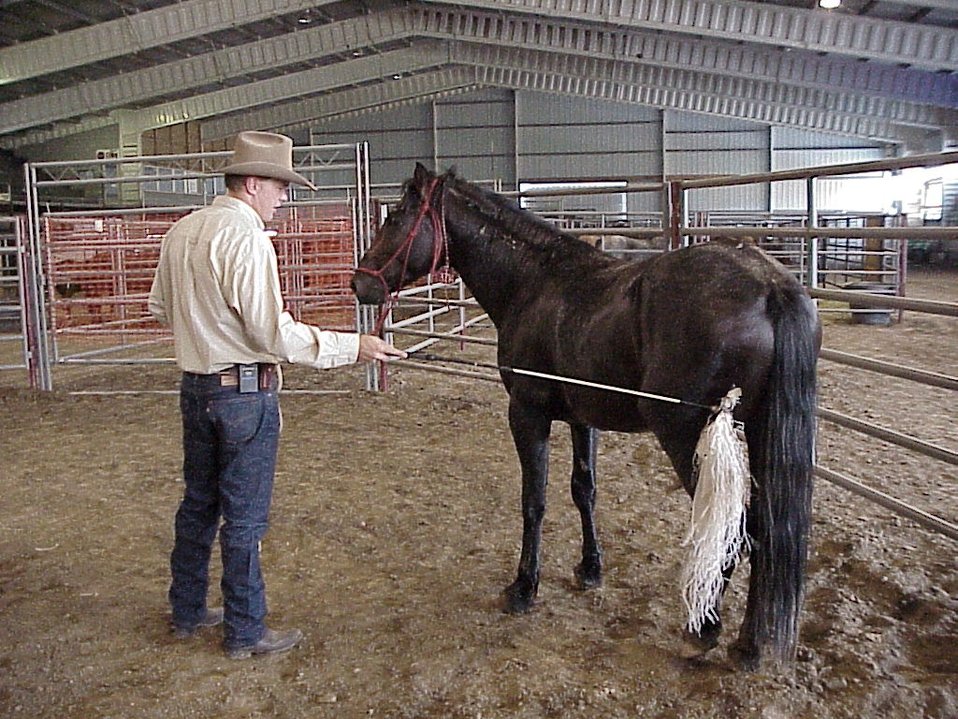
Horse Gentler Mario Johnson Lewiston Wild Horse and Burro Adoption Program Auction WHB indoor auction Cottonwood Field Office UCSC Upper Columbia Salmon Clearwater District